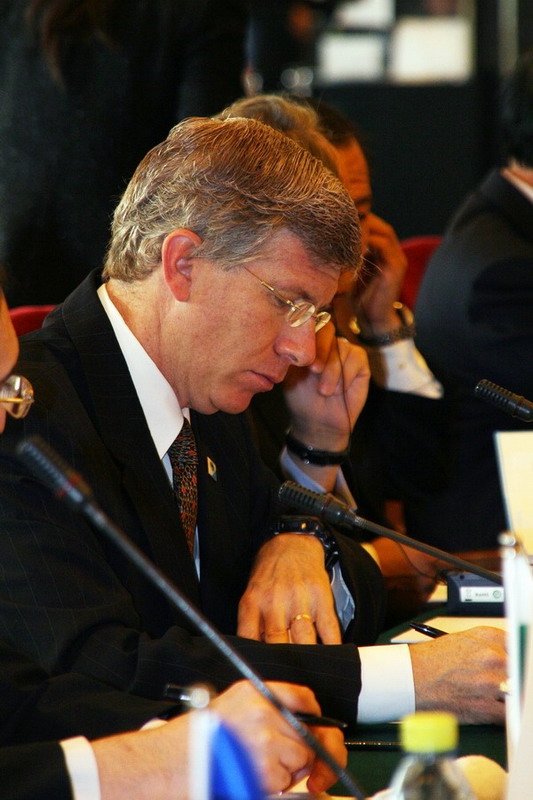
Deputy Secretary Poneman attends the Global Nuclear Energy Partnership Meeting in Beijing.